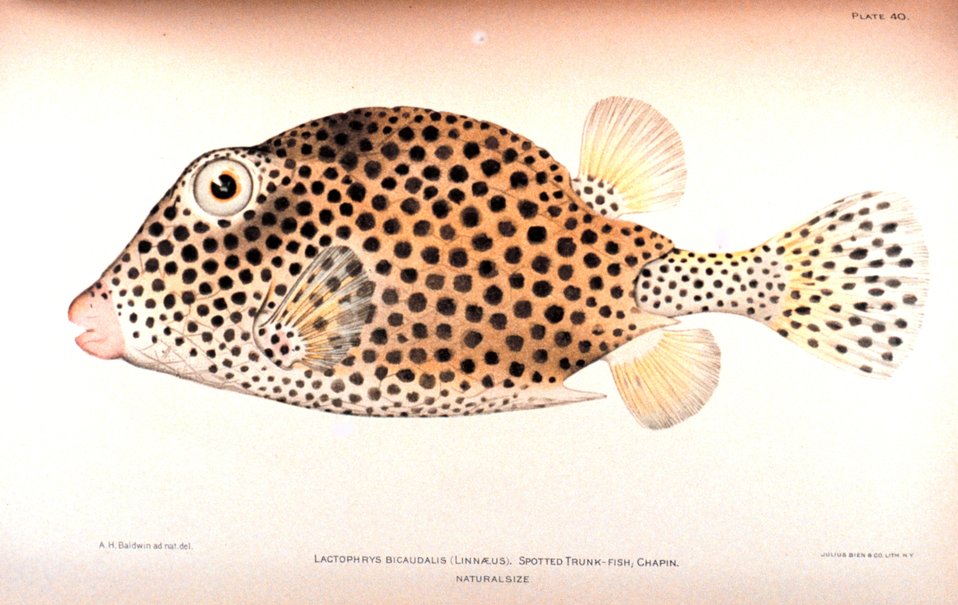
Lactophrys bicaudalis (Linnaeus). Spotted Trunk-fish; Chapin. In: 'The Fishes of Porto Rico', by Barton Warren Evermann and Millard Caleb Marsh. Bulletin of the United States Fish Commission, Vol. XX for 1900. First Part. P. 350, Plate 40.